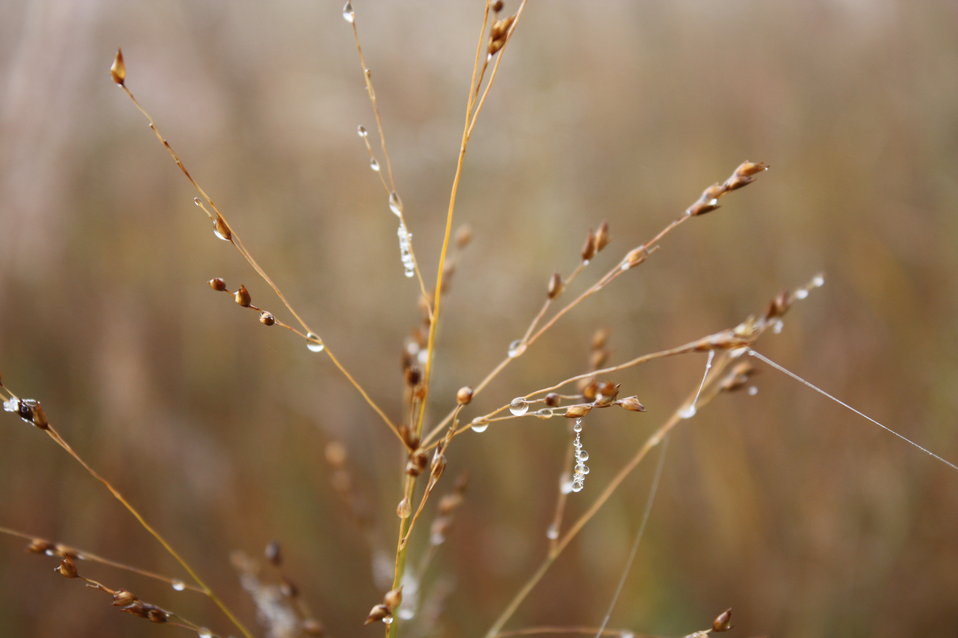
Switchgrass

One of the taller tallgrass species - can grow from 3 to 6 feet tall. Is a beautiful golden color in fall.